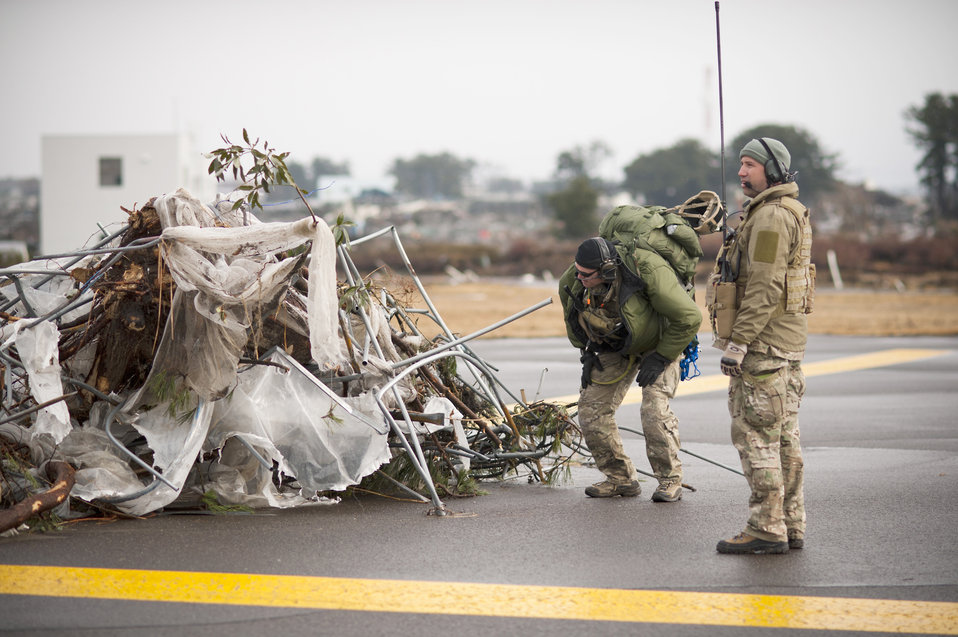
Headline

Members of the 320th Special Tactics Squadron (STS) assess debris on the runway at Sendai Airport, Japan, March 16, 2011. Members of the 320th STS from Kadena Air Base, Japan, deployed to Sendai Airport to help clear the runway and make it ready for fixed-wing aircraft traffic.